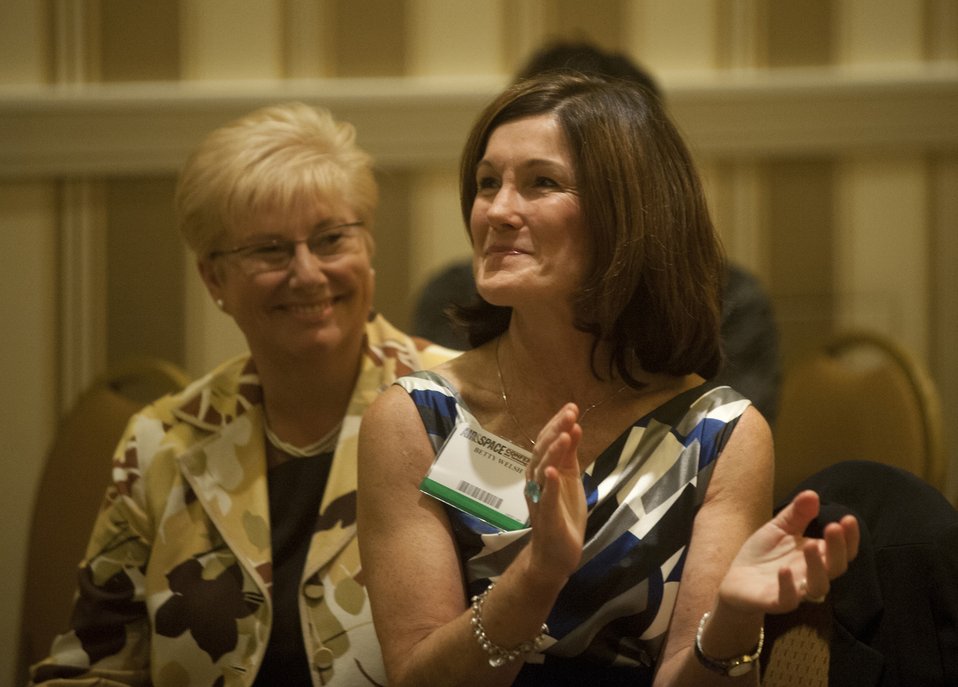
Partnerships develop Air Force youth

Betty Welsh, wife of Air Force Chief of Staff Gen. Mark A. Welsh III, applauds as she listens to a speaker during the Air Force Association Family Forum in Washington, D.C., Sept. 17, 2012. Beside her is Paula Roy, the wife of Chief Master Sgt. of the Air Force James Roy.